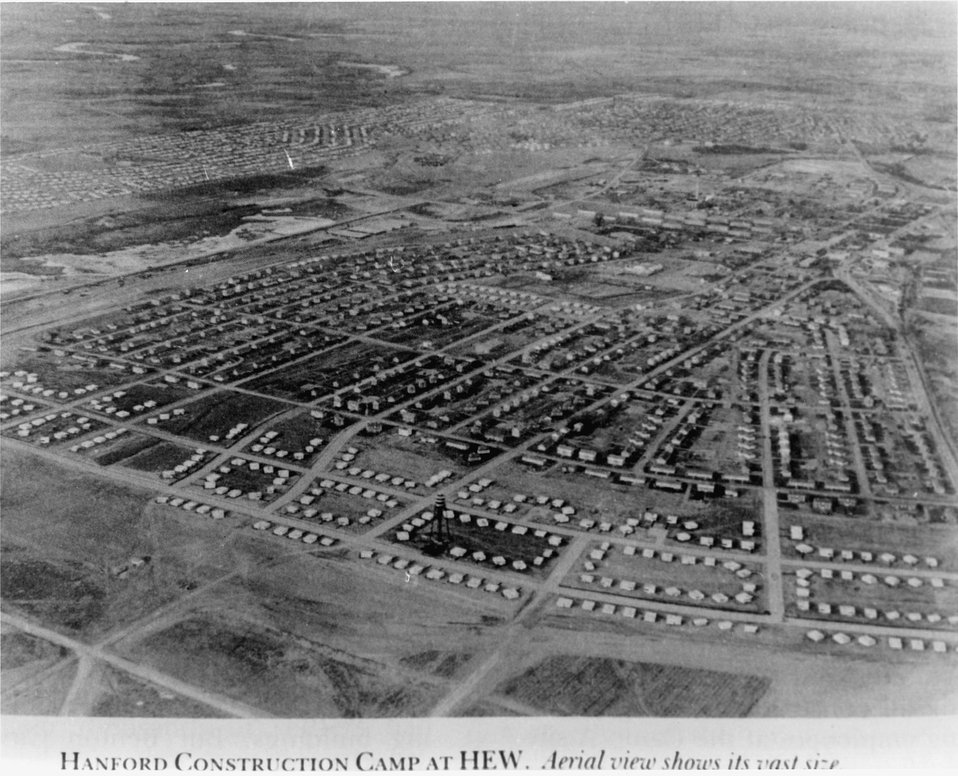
Aerial view of Hanford Community. c. undated